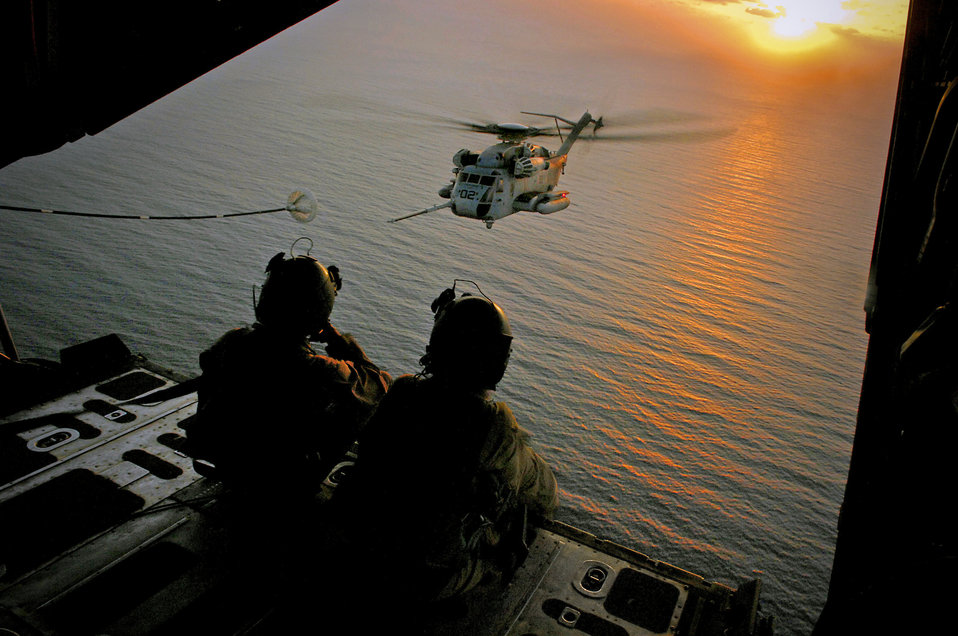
Taking it easy

Senior Airmen Daniel Sullivan (left) and Renea Zachary observe a Marine CH-53 Sea Stallion from their HC-130 Hercules Jan. 19 during a refueling operation. The Airmen are loadmasters with the 71st Expeditionary Search and Rescue Squadron based at Moody Air Force Base, Ga.